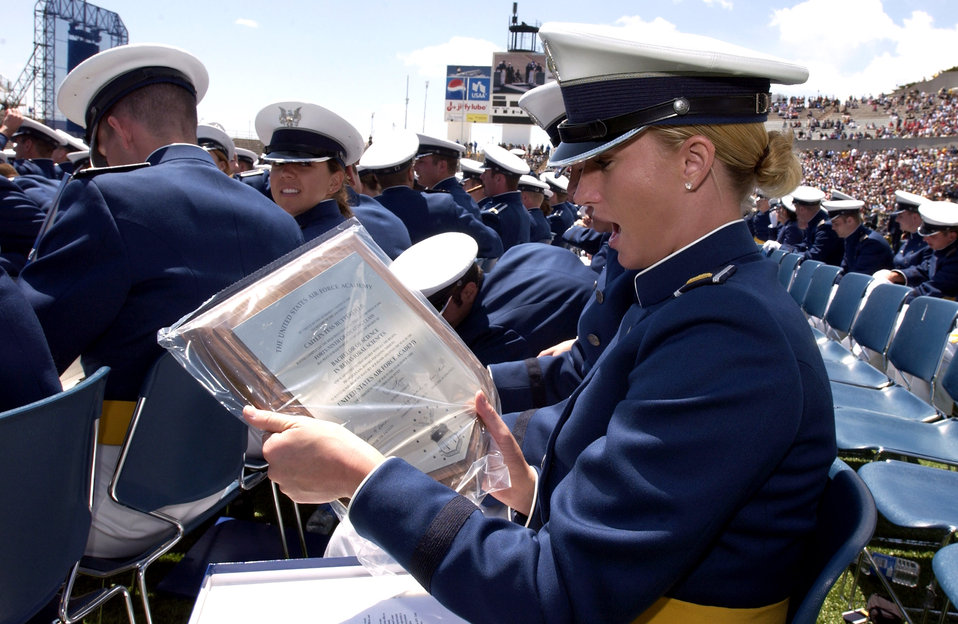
'Stay true' SECDEF tells Air Force Academy grads

Newly minted 2nd Lt. Catlin Tess Butterfield admires her diploma during the 2007 U.S. Air Force Academy graduation ceremony May 30 in Colorado Springs, Colo.